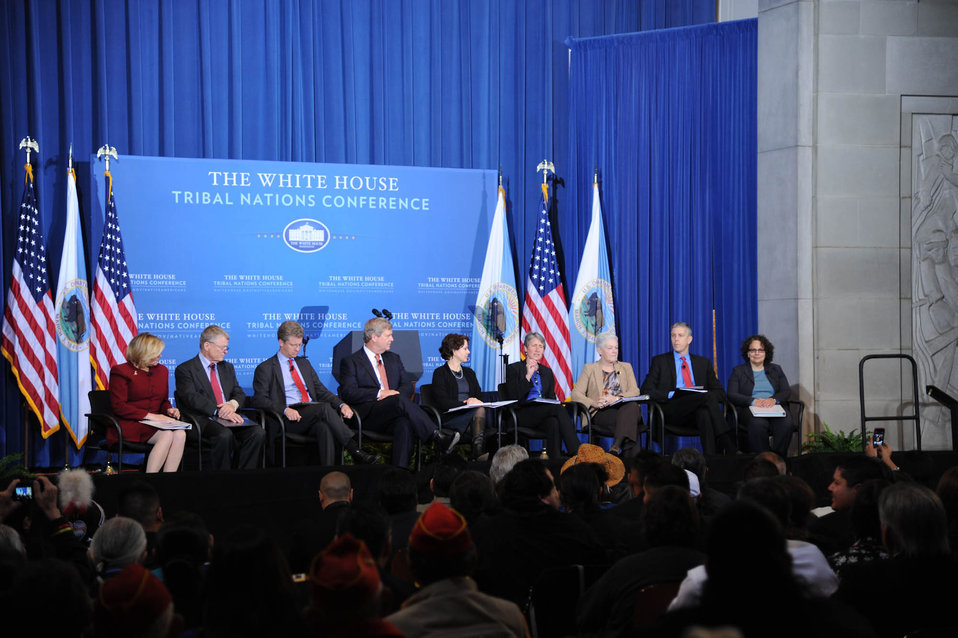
November 13, 2013 - Administrator McCarthy attends White House Tribal Conference

Administrator McCarthy joined President Obama and other administration officials at the White House Tribal Conference on November 13, 2013. The Conference was attended by leaders of 566 federally recognized tribes and members of the White House Council on Native American Affairs.